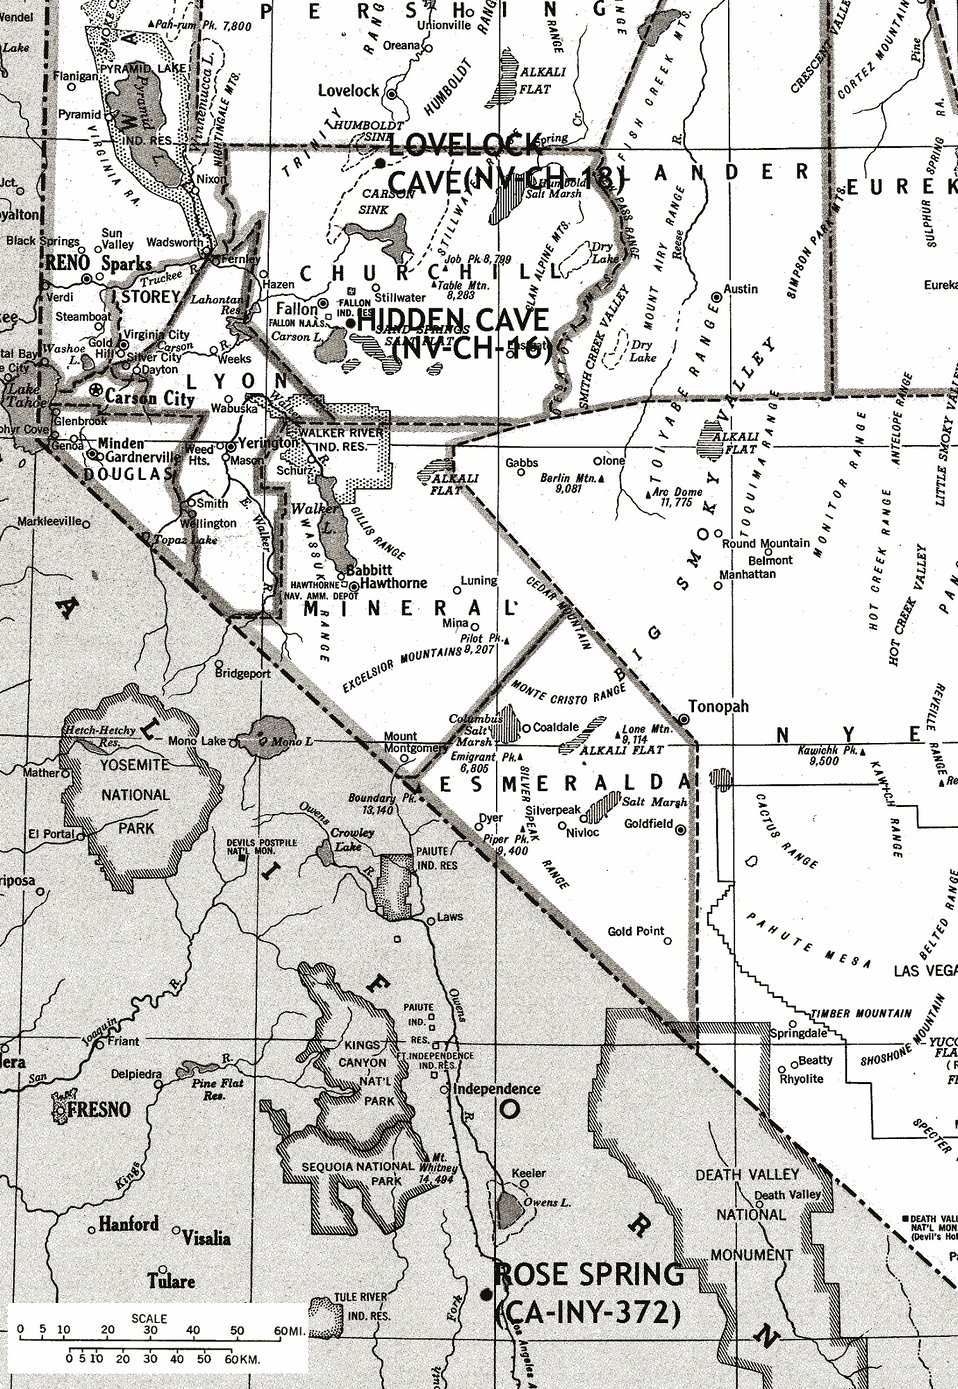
Map of a portion of the Great Basin and project sites.